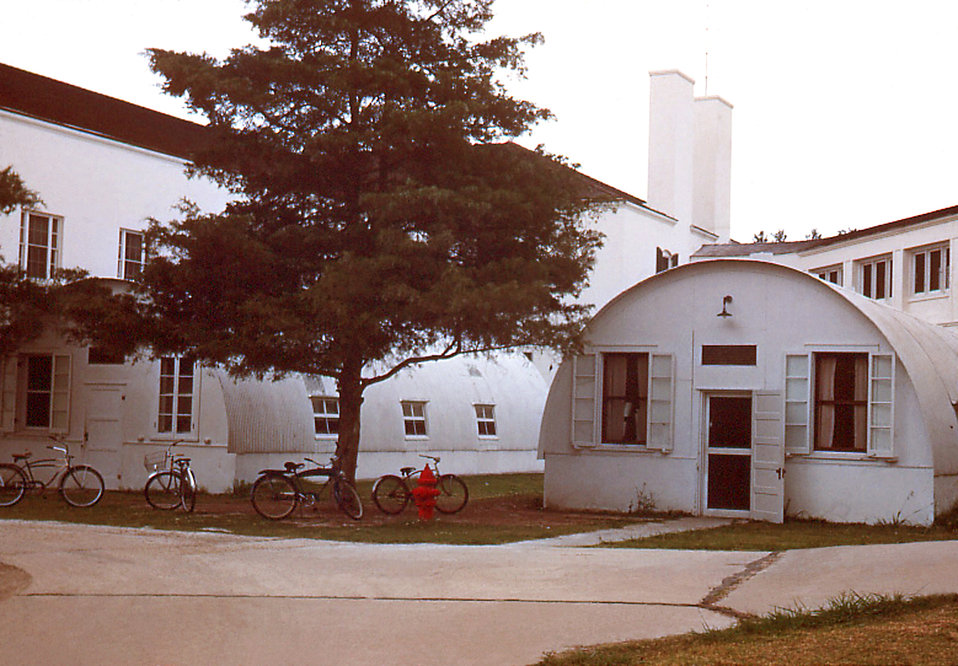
This historic image depicted the Quonset huts that were erected on the grounds of the Carville, Louisiana Leprosarium, for the purpose of acting as school houses where children, who'd been victims of leprosy, as well as hospital patients could be taught. The hospital was a self-contained compound with its own power plant, storehouse, patient treatment centers, which included a dental office, food-processing facilities, i.e., a cafeteria, and its own cemetery.